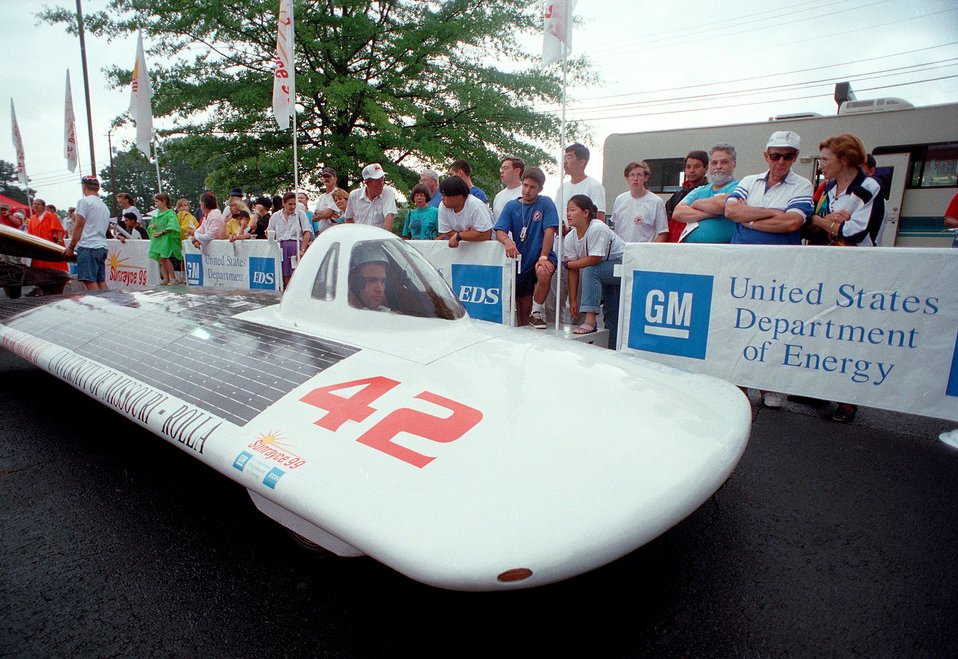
#42 UNIVERSITY OF MISSOURI- ROLLA.

SUNRAYCE 1999 STARTED IN WASHINGTON, DC, JUNE 20, 1999 AND WAS COMPLETED ON JUNE 29, 1999 AT DISNEY WORLD IN FLORIDA. DOE HELPS TO SPONSOR THE SUNRAYCE AS PART OF ITS COMMITMENT TO RESEARCH AND DEVELOPMENT OF CLEAN , COST EFFECTIVE, ENERGY EFFICIENT RENEWABLE ENERGY. THE SUNRAYCE BRINGS TOGETHER TEAMS OF STUDENTS FROM A WIDE RANGE OF DISCIPLINES, INCLUDING ENGINEERING, COMPUTER SCIENCE, PHYSICS, MARKETING AND GRAPHICS. STUDENTS MUST DESIGN, CONSTRUCT AND RACE THEIR SOLAR-POWERED VEHICLES, WITH FACULTY ACTING ONLY IN ADVISORY CAPACITY.